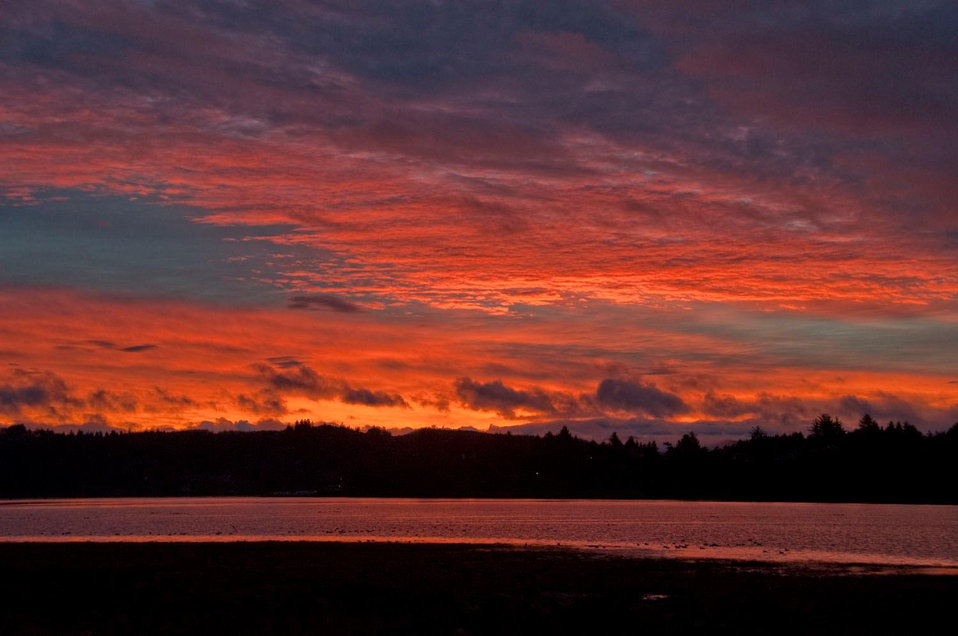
winter sunrise

Oregon Coast National Wildlife Refuge Complex office, Newport, OR
January 3, 2012